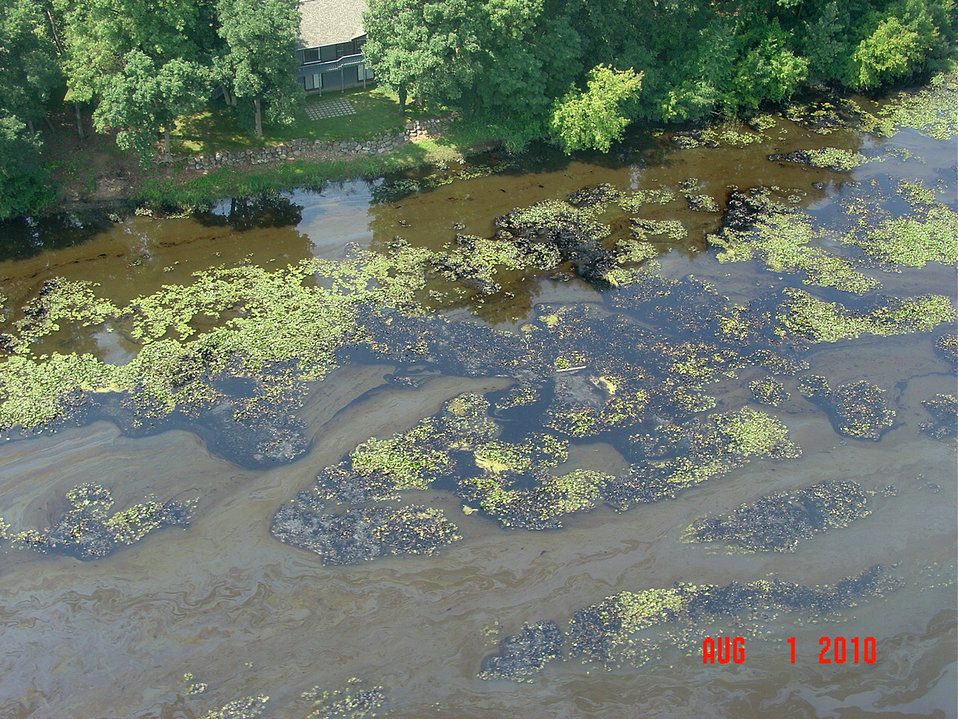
EPA's response to the Enbridge oil spill

August 1, 2010 - Oiled vegetation upstream of Ceresco Dam